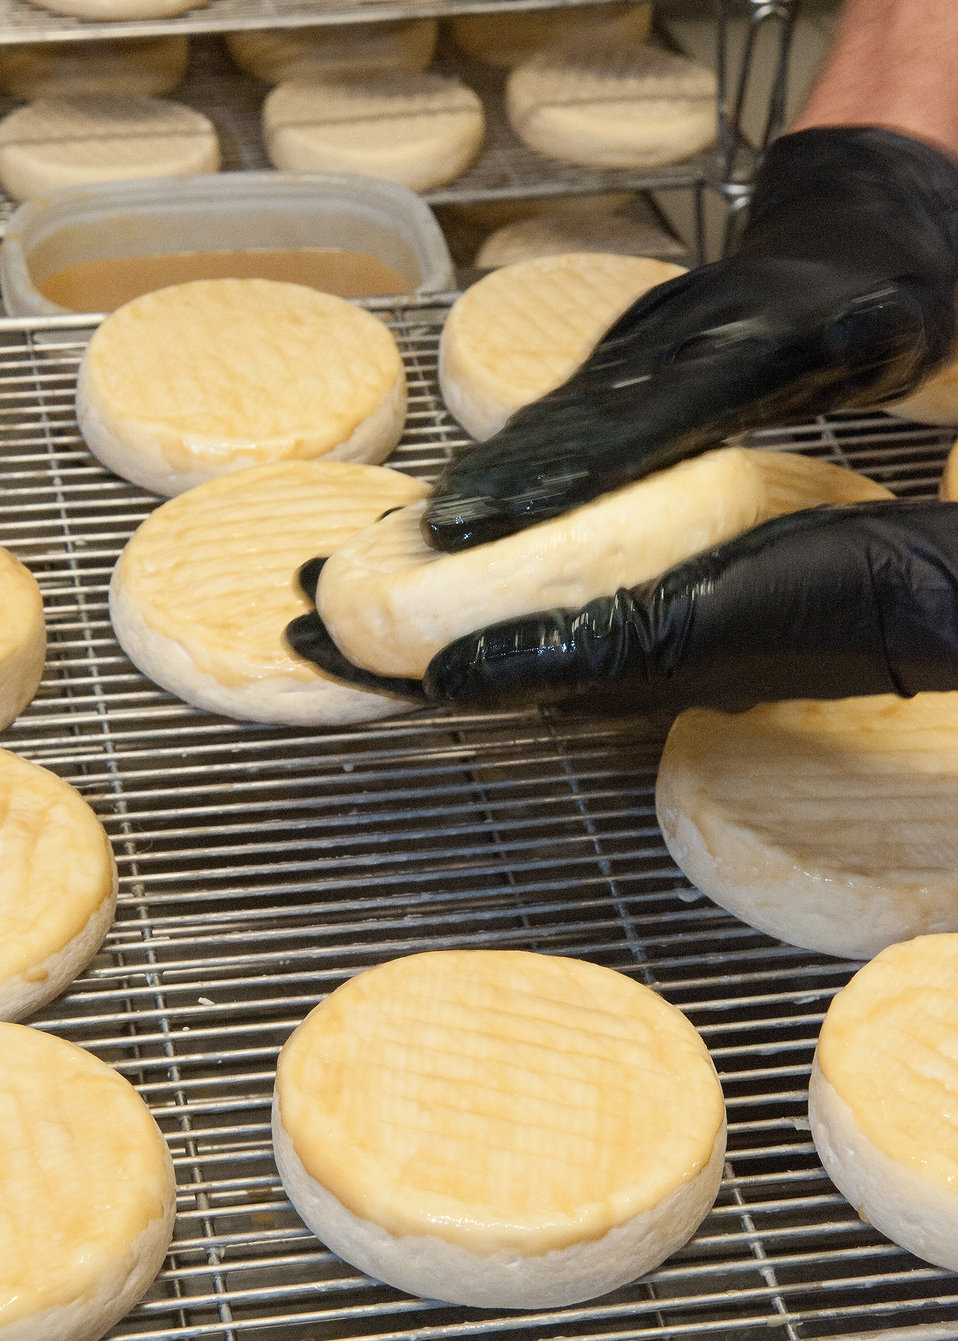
Willoughby cheese developed at The Cellars at Jasper Hill in Greensboro, VT is a thin; tacky rind cheese with a lightly pungent, savory base with ripe-peach and cream flavors. The soft, edible rind is mild and complimentary in texture to the smooth interior. The cheese is washed with hard apple cider. The Cellars at Jasper Hill, an innovative 22,000 square foot underground facility consisting of seven ageing caves received a U. S. Department of Agriculture (USDA) Rural Development (RD) Business and Industry Guaranteed (BIG) Loan. This loan was used to construct state-of-the-art artesian cheese aging cave facility to support expanded on-farm value-added cheese production as well as contract aging for other local cheese makers so they may access the growing market for artisan cheese nationwide on Sep. 19, 2013.